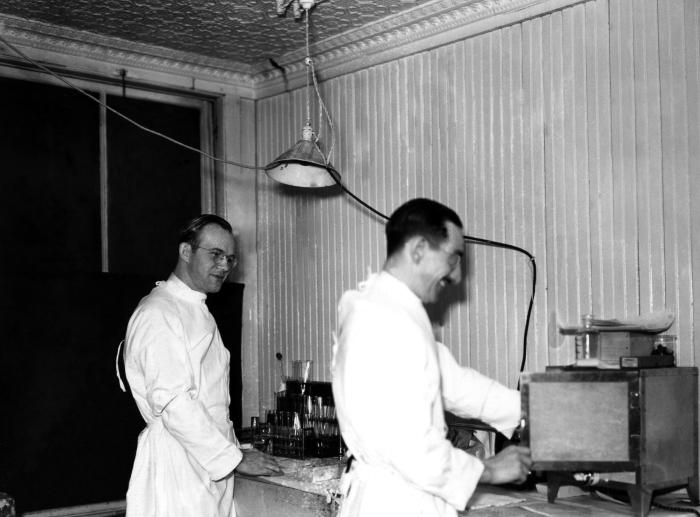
This historical image was provided by the Center for Disease Control's (CDC), National Institute for Occupational Safety and Health (NIOSH). The photograph depicted two public health scientists in the process of testing air samples, which were gathered during a public health study that measured the air quality inside the factories involved in the production of hats from animal furs. Neither man was wearing gloves, or filtered breathing masks, but did 'seem' to be wearing protective eyewear.